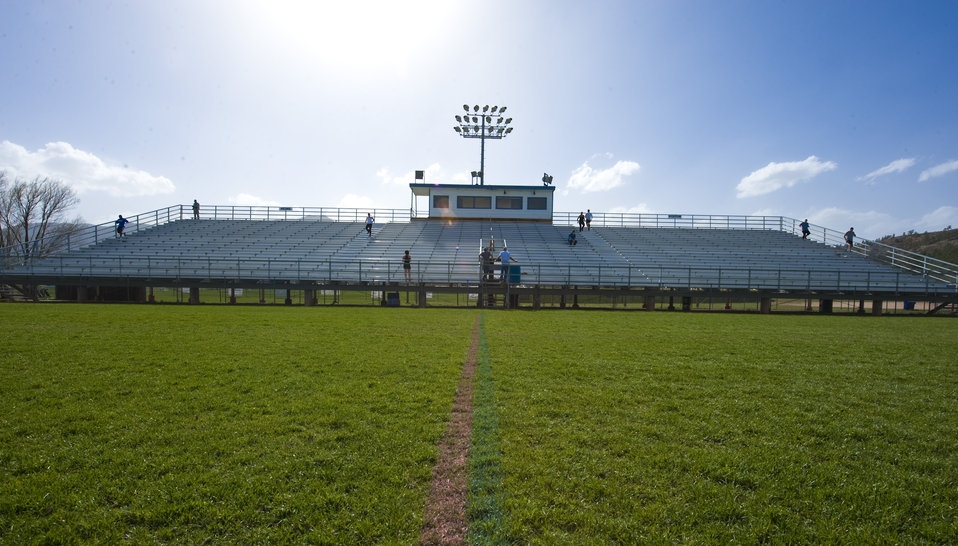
Warrior Games

The Air Force team run bleachers during their first training session leading up to the Warrior Games, May 9, 2011, at the Air Force Academy. The Warrior Games help elevate abilities through athletic competition for wounded, ill, and injured service members by providing a focal event to empower the incorporation of athletics into military wounded warrior programs, the games run through May 16 – May 21.